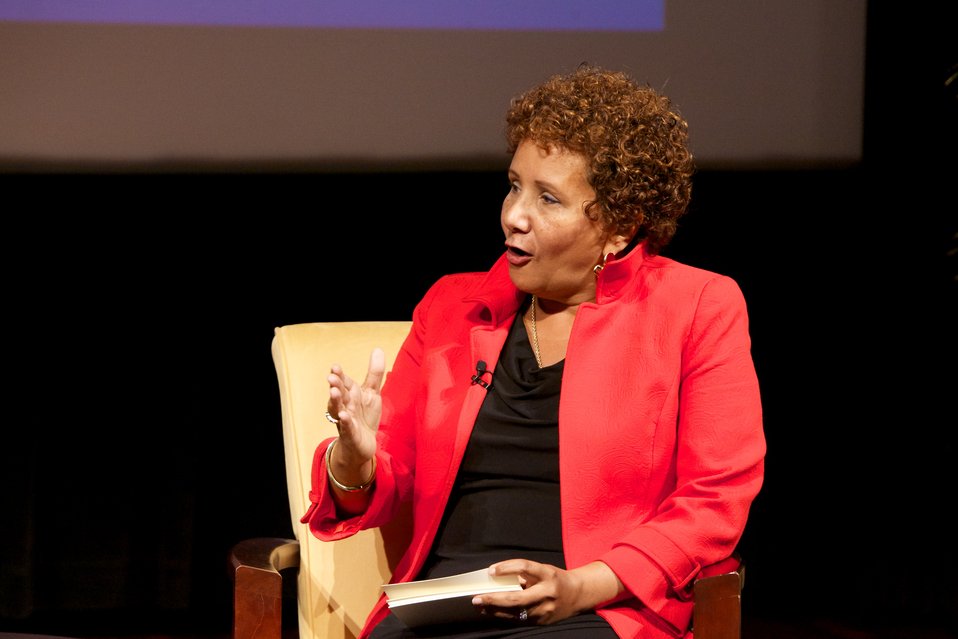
Brown at 60: Is Full Equality Within Our Grasp? A Conversation on Zero Tolerance, Segregation, and the Promise of Justice